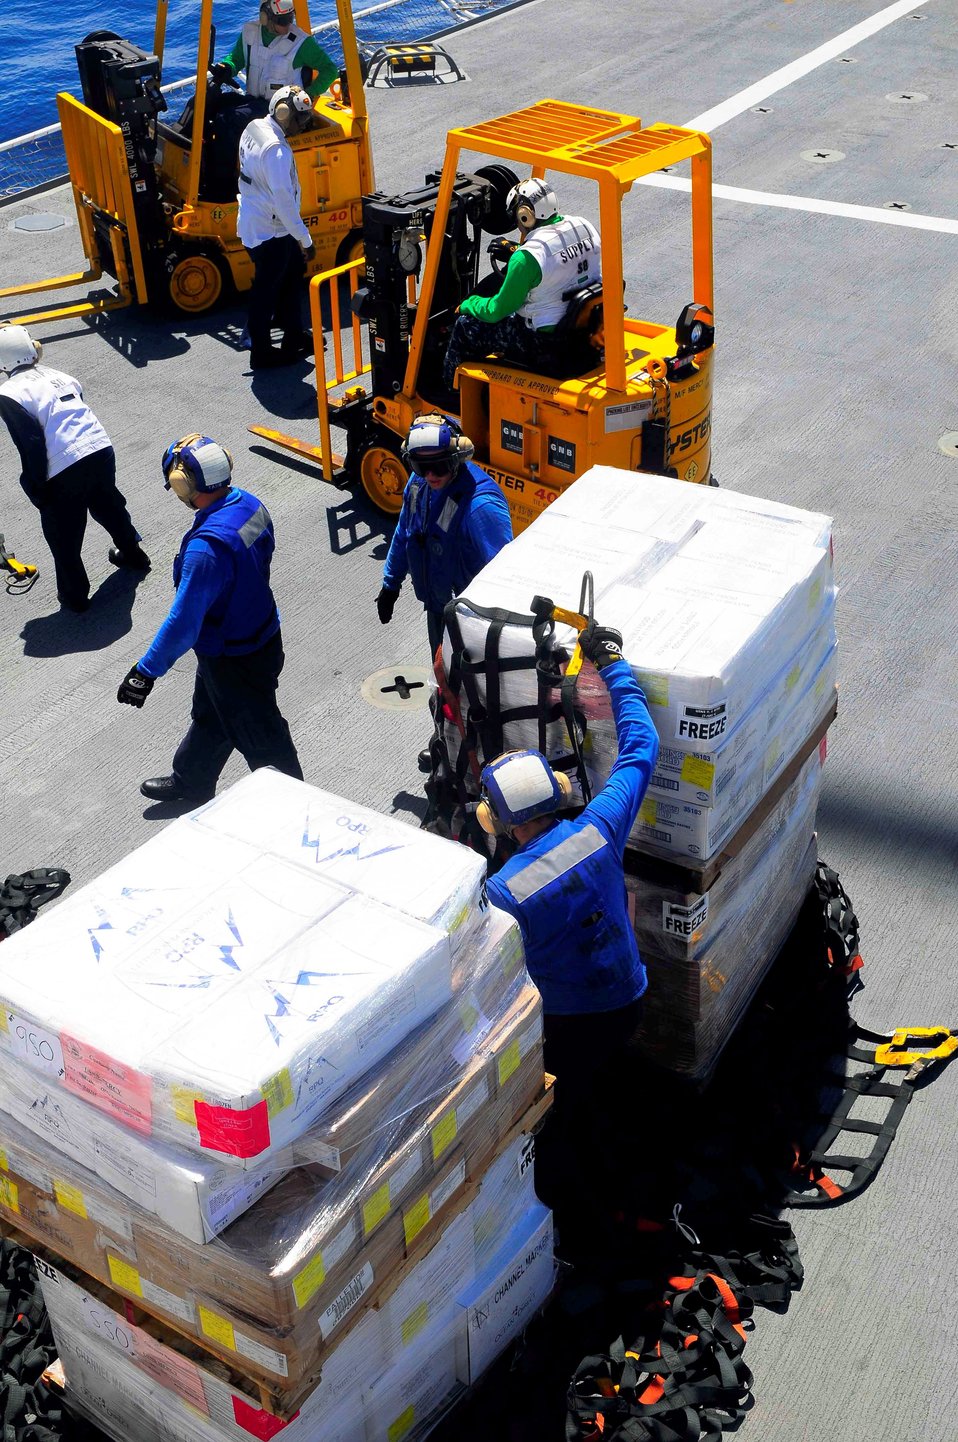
Sailors Clear Pallets of Cargo From Flight Deck

Sailors clear pallets of cargo from the flight deck aboard the Military Sealift Command hospital ship USNS Mercy (T-AH 19) during a vertical replenishment at sea in the Pacific Ocean on June 29, 2010. Mercy is conducting Pacific Partnership 2010, the fifth in a series of annual U.S. Pacific Fleet humanitarian and civic assistance endeavors to strengthen regional partnerships.